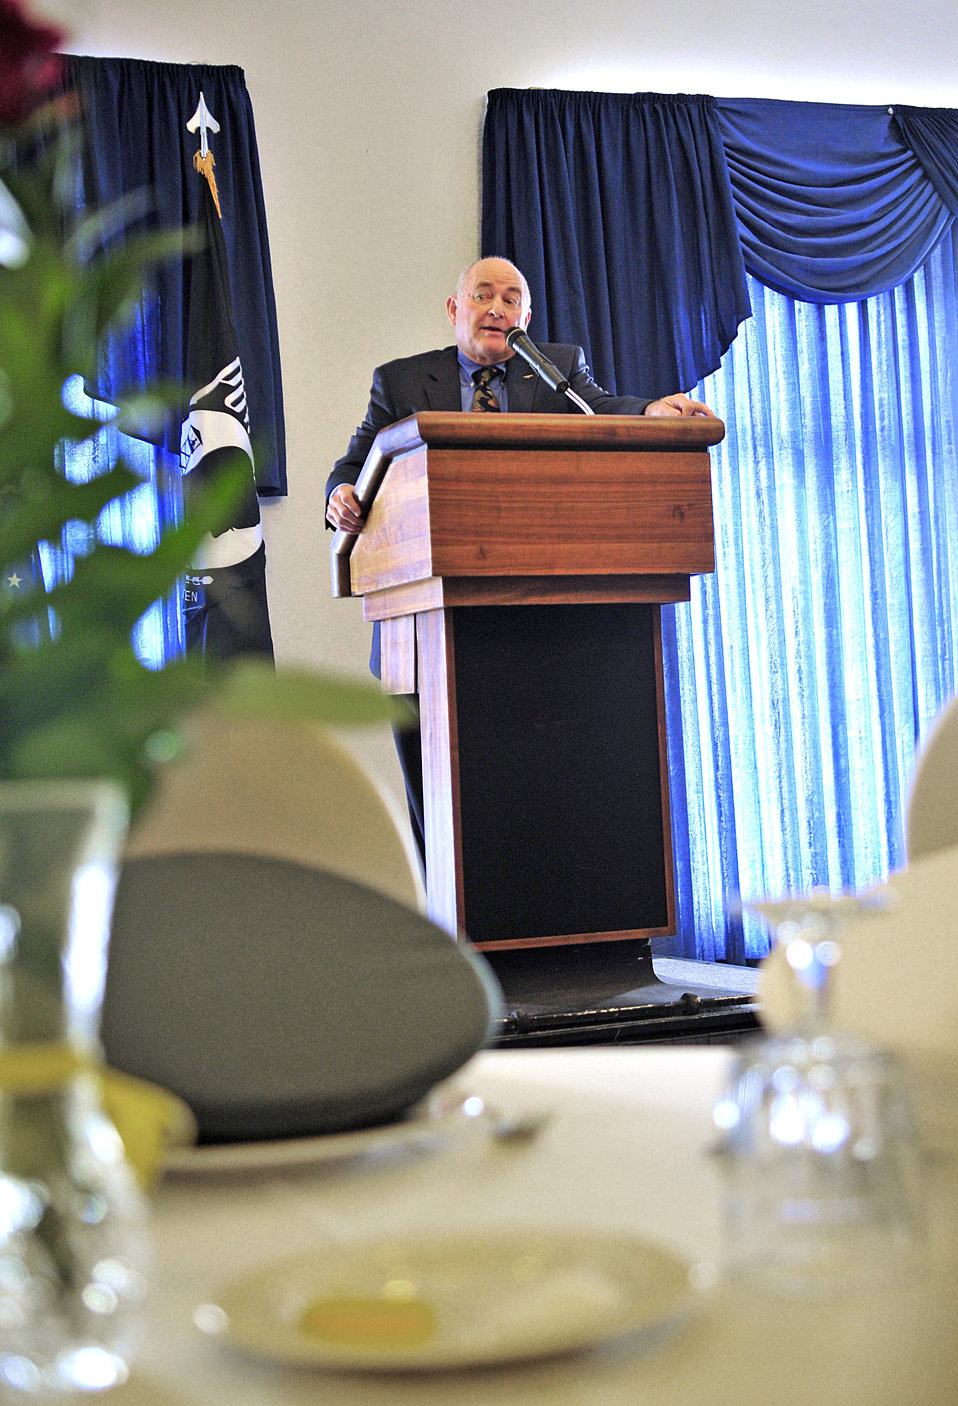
Former POW inspires audience with experiences, wisdom

Former prisoner of war, retired Navy Capt. David Hoffman, addresses the audience at the POW/Missing in Action Luncheon, Sept. 17, 2010, at Ramstein Air Base, Germany.